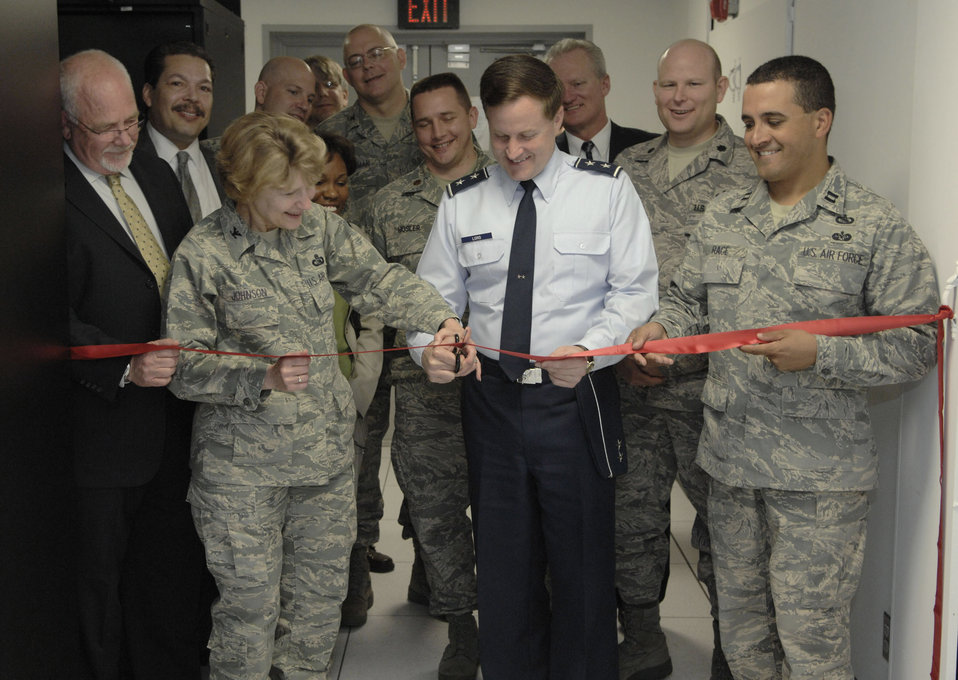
New Area Processing Center consolidates mail, file sharing

Maj. Gen. William T. Lord and Col. Kim Johnson cut the ribbon May 1 on the Andrews Area Processing Center at Andrews Air Force Base, Md. The APC consolidates e-mail, file sharing and many other data and information services for more than 160,000 Air Force workers. General Lord is the Air Force Cyber Command provisional commander and Colonel Johnson is the 844th Communications Group commander.